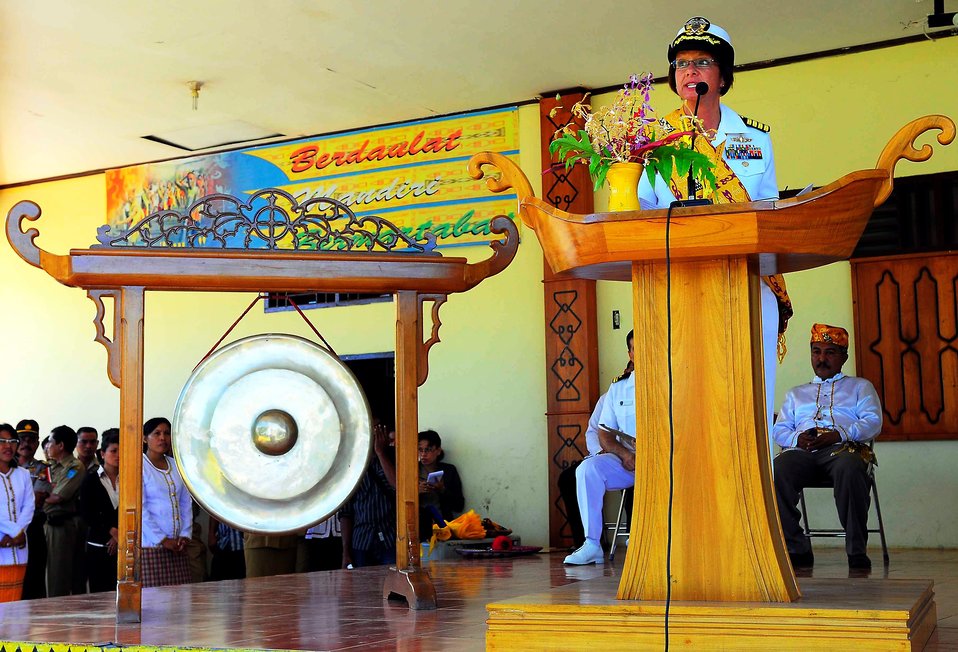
Pacific Partnership 2010 Commander Capt. Lisa M. Franchetti gives opening remarks during a ceremony marking the beginning of operations by Military Sealift Command hospital ship USNS Mercy (T-AH 19) crewmembers in support of Pacific Partnership 2010 in Tobelo, Indonesia, on July 13, 2010. Pacific Partnership 2010 is the fifth in a series of annual U.S. Pacific Fleet humanitarian and civic assistance endeavors to strengthen regional partnerships.